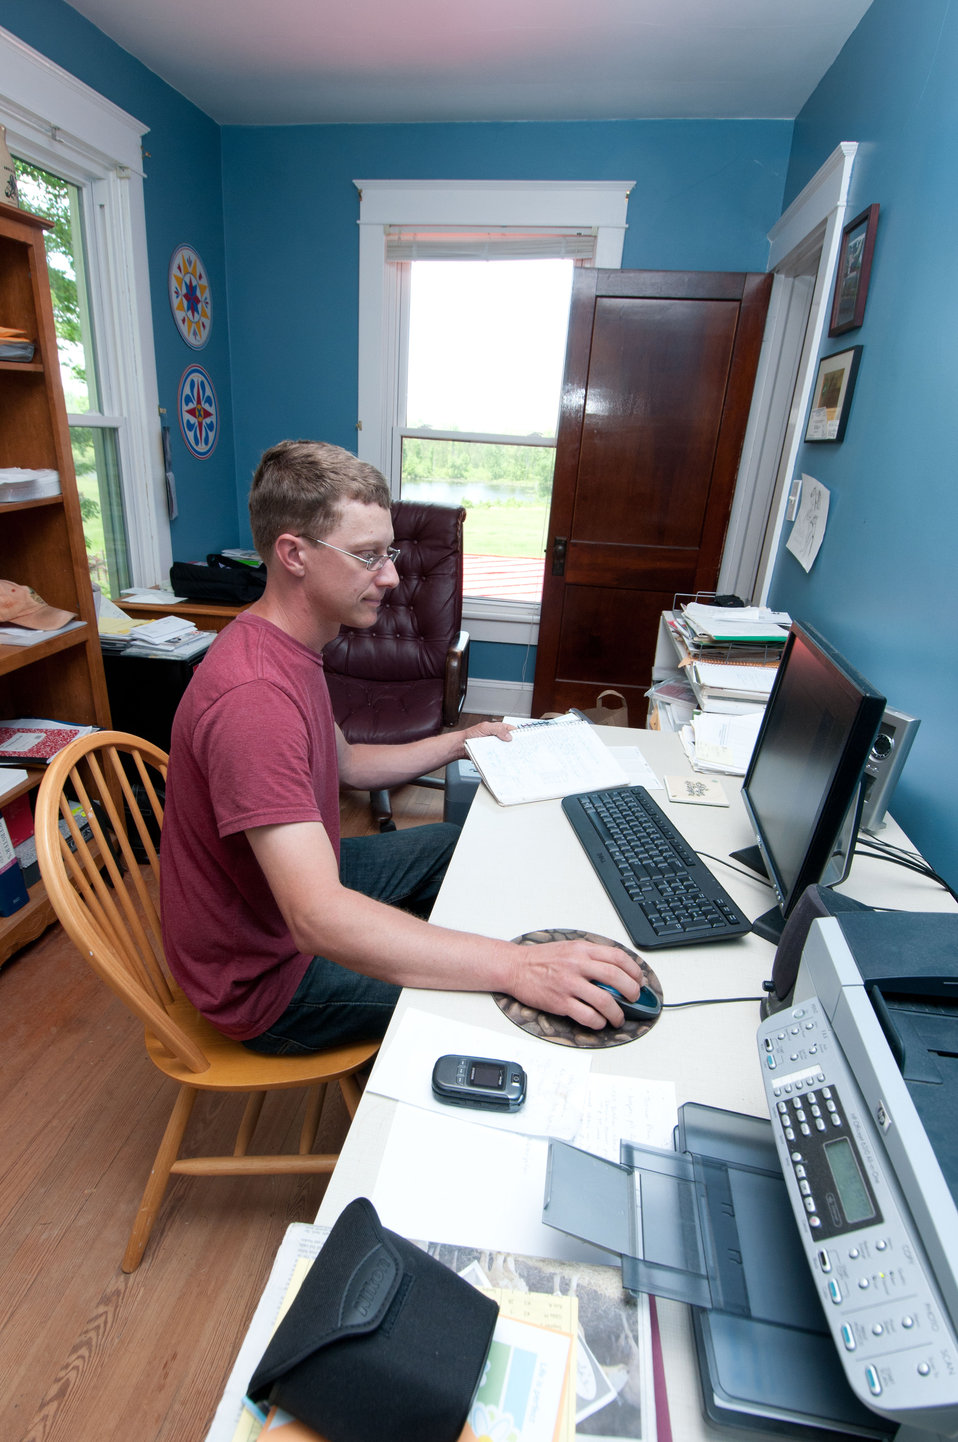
Bruce Johnson, owner of the Dragonfly Farm in Beaverdam, VA, updates an online inventory at on Friday, May 6, 2011, just as dozens of other suppliers associated with Lulus Local Food website also do every Friday. Over the weekend the inventory becomes visible for sale to members of Lulus Local Food website and distributed with the help of other suppliers participating with Fall Line Farms food hub. Together, they offer a wide variety of household food staples and specialty items. Members pick their customized orders from an ever changing seasonal inventory of fruits, vegetables, meats, soaps, eggs, cheeses, flowers, honey, pastas, sauces, syrups, baked goods, mushrooms, flour and grains from the Richmond area.